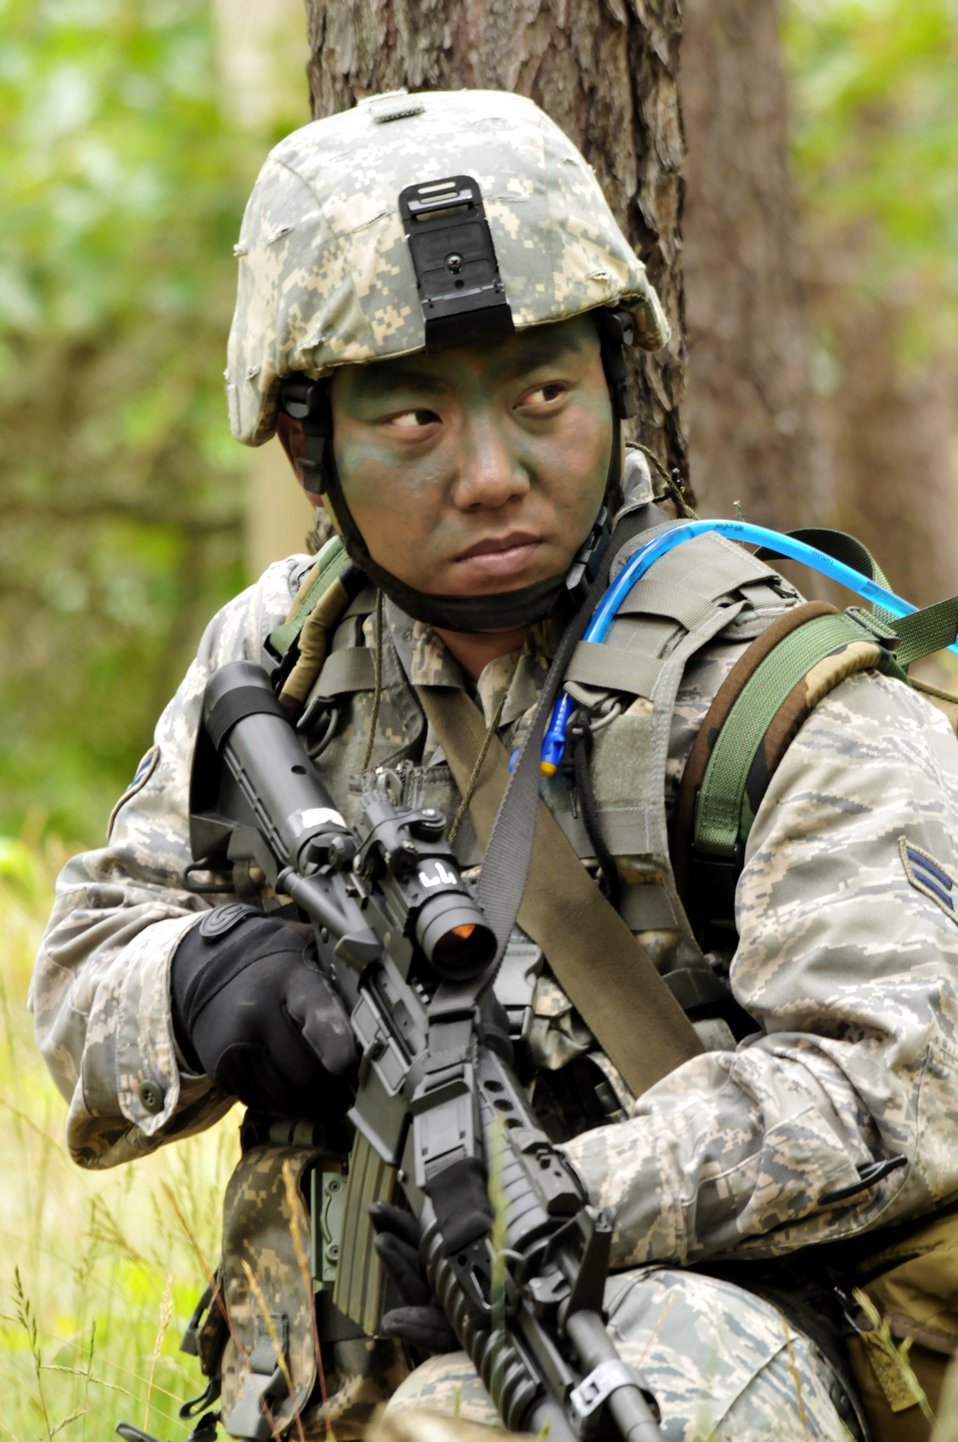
Security forces land navigation exercise

Airman 1st Class Thao Moua scans the tree line for enemy combatants during a security forces land navigation exercise June 13, 2010, at Volk Field Combat Readiness Training Center Wis. Airman Moua is an apprentice with the 115th Security Forces Squadron.